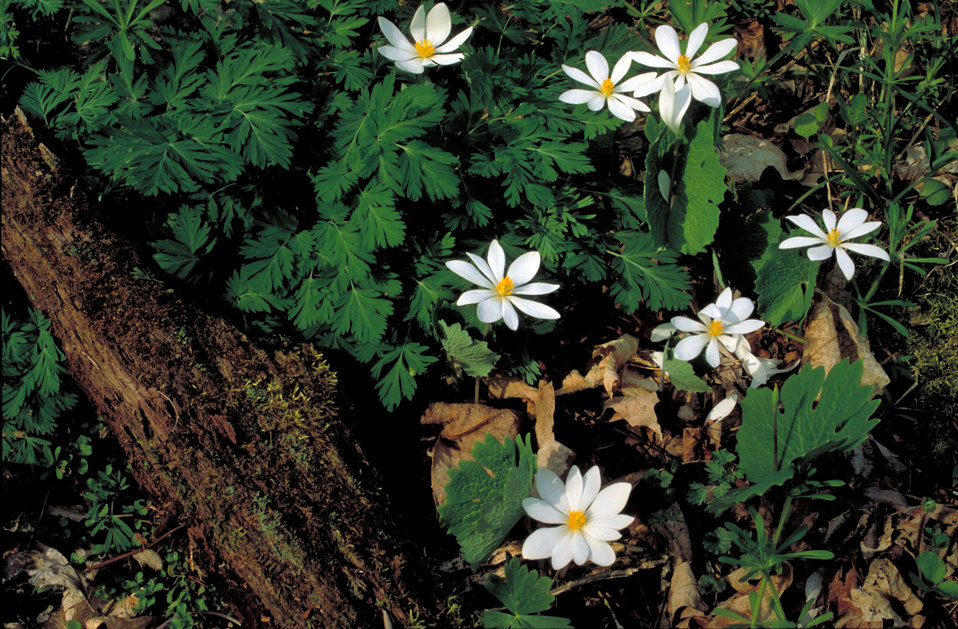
White bloodroot flowers

Shot of white woodland flowers with yellow centers.